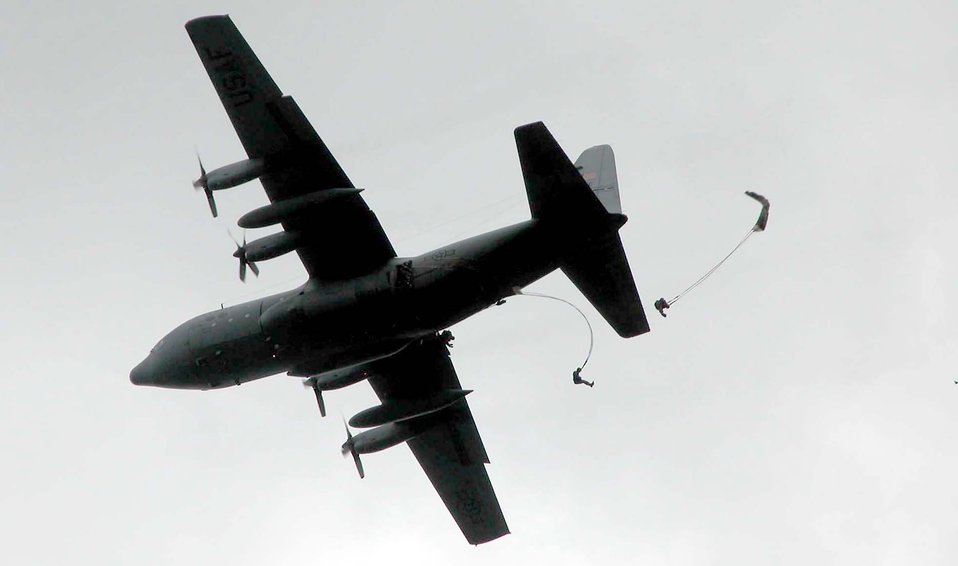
A tribute

SAINTE-MERE-EGLISE, France -- Soldiers jump from a C-130 Hercules near here June 5 during a tribute to airborne Soldiers who died in the liberation of France in 1944. Equipment and conditions in the 2004 commemoration jump stand in stark contrast to that of 60 years ago.